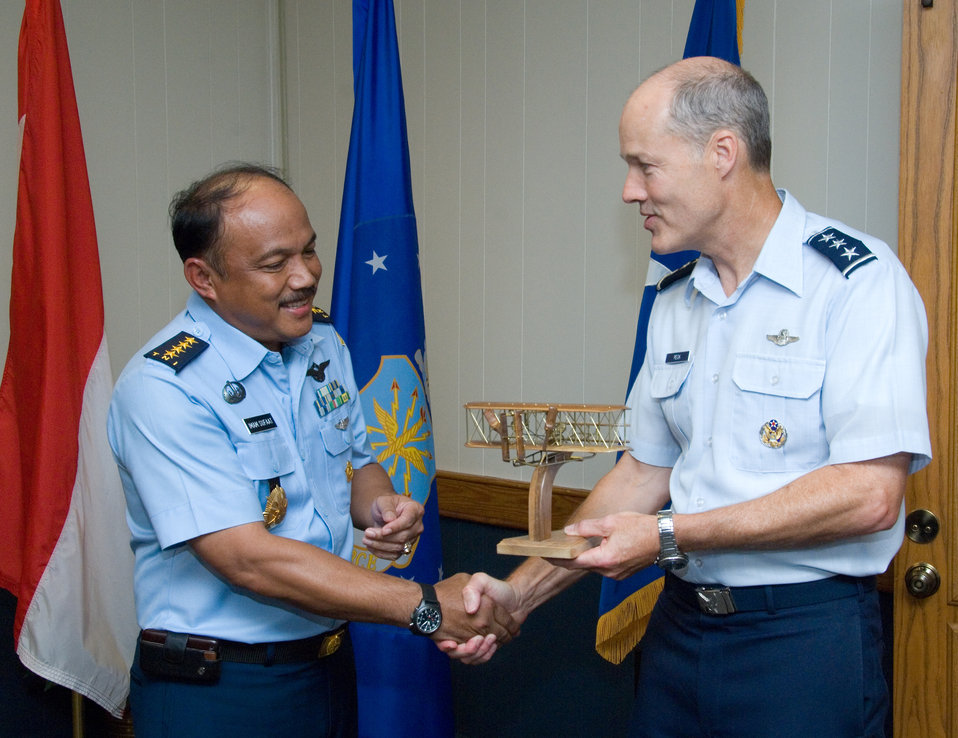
Air University inducts Indonesian air force chief into international honor roll

Lt. Gen. Allen Peck hands a model of the Wright Flyer to Air Chief Marshal Imam Sufaat July 12, 2010 at Maxwell Air Force Base, Ala., upon his induction into the Air University international honor roll. The first plane to fly on the site that is now home to Air University was the Wright Brothers' aircraft in 1910. General Peck is the commander of Air University, and Air Chief Marshal Sufaat is the Indonesian air force chief of staff.